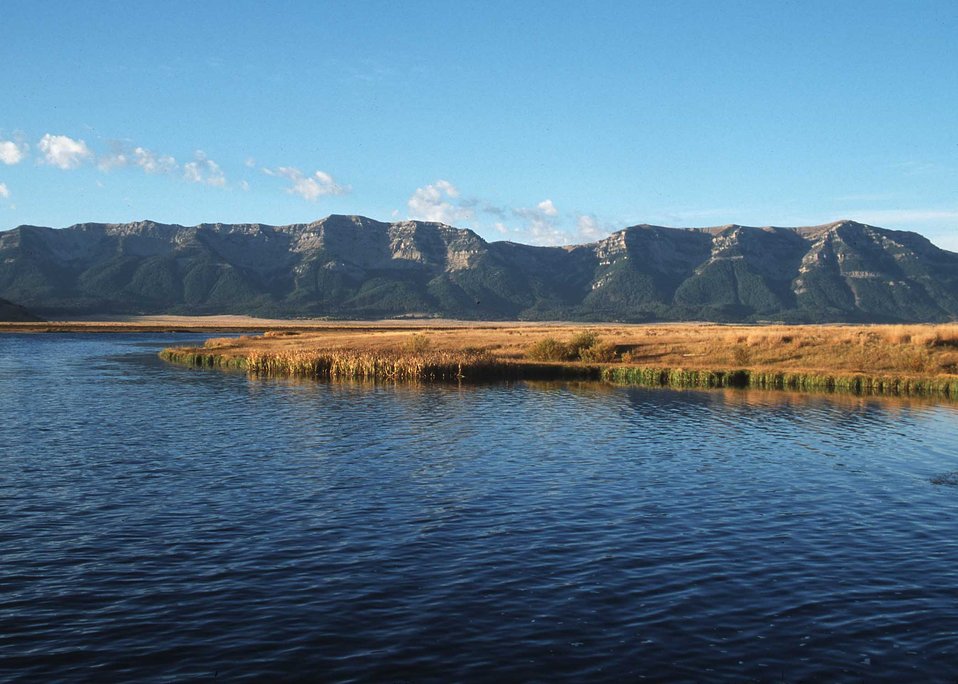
Scenic wetland.